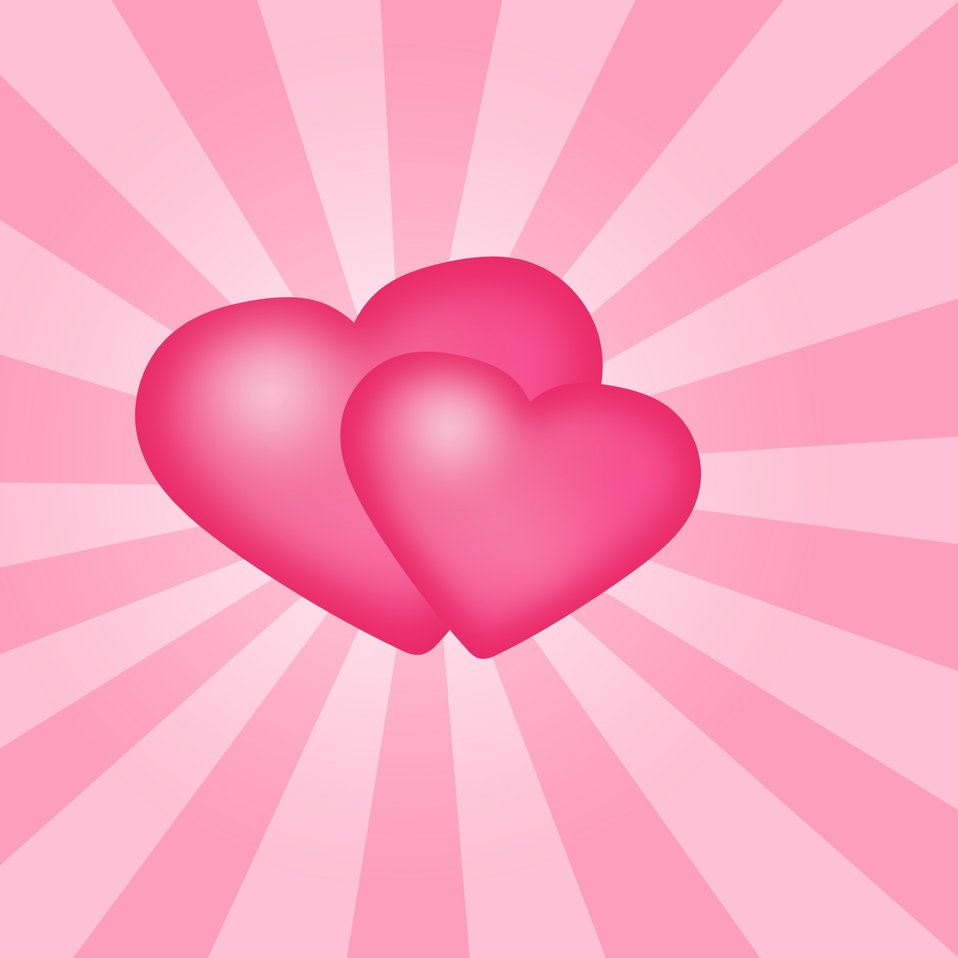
Pink hearts background

Two hearts on striped background.